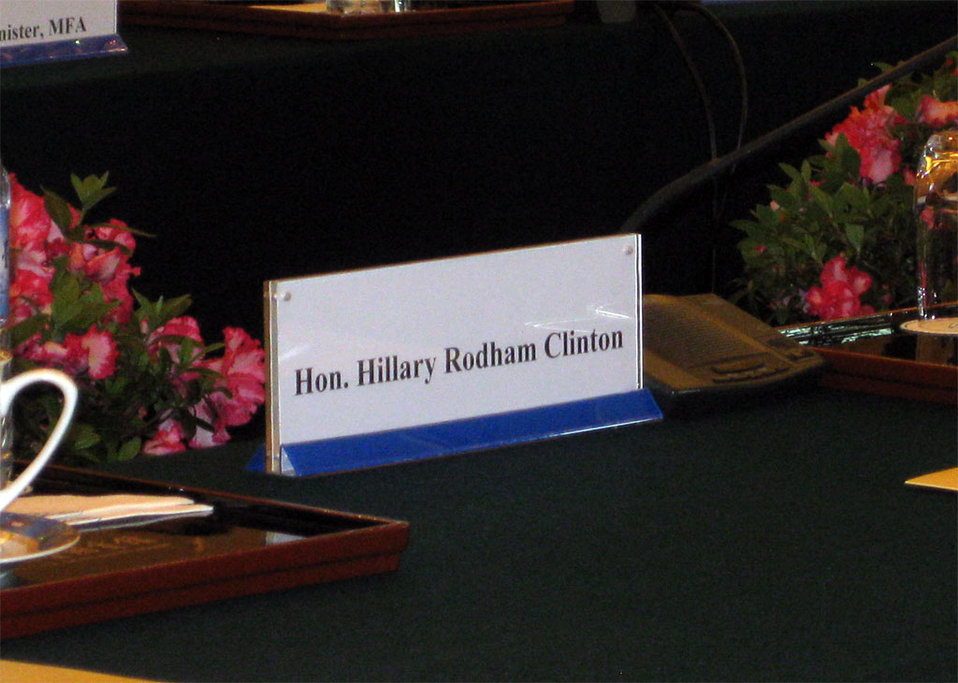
Placard at Diaoyutai State Guesthouse

Behind the Scenes: A name placard for U.S. Secretary of State prior to meetings with Chinese officials at the Diaoyutai State Guesthouse in Beijing, China February 20, 2009.